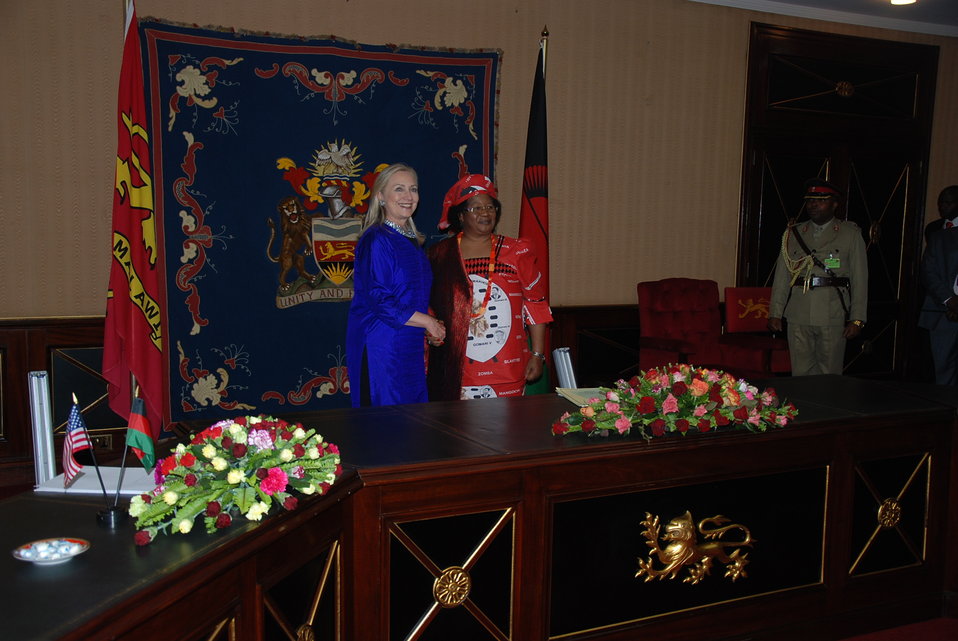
Secretary Clinton and President Banda in Malawi

President Joyce Banda of Malawi and U.S. Secretary of State Hillary Rodham Clinton pose for a photograph prior to their bilateral meeting in Lilongwe, Malawi, August 5, 2012.